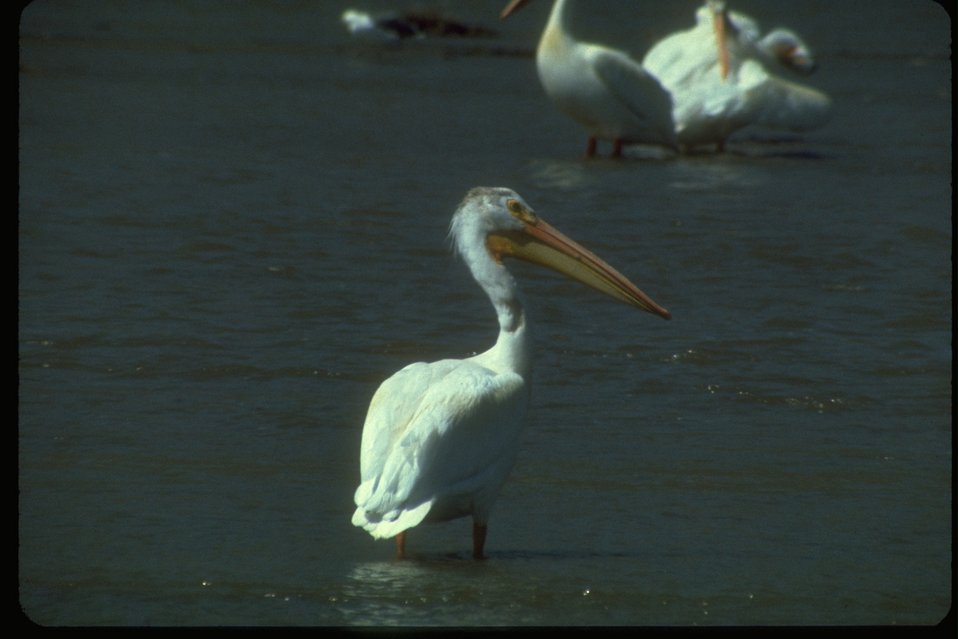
Pelecanus